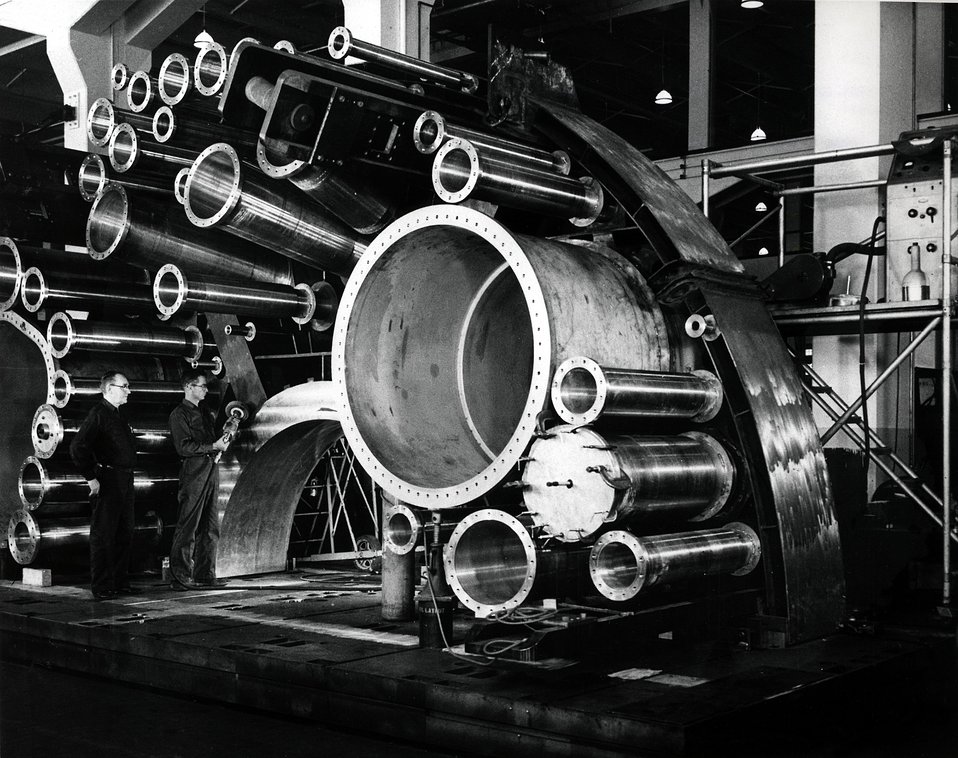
Reactor arrangement.